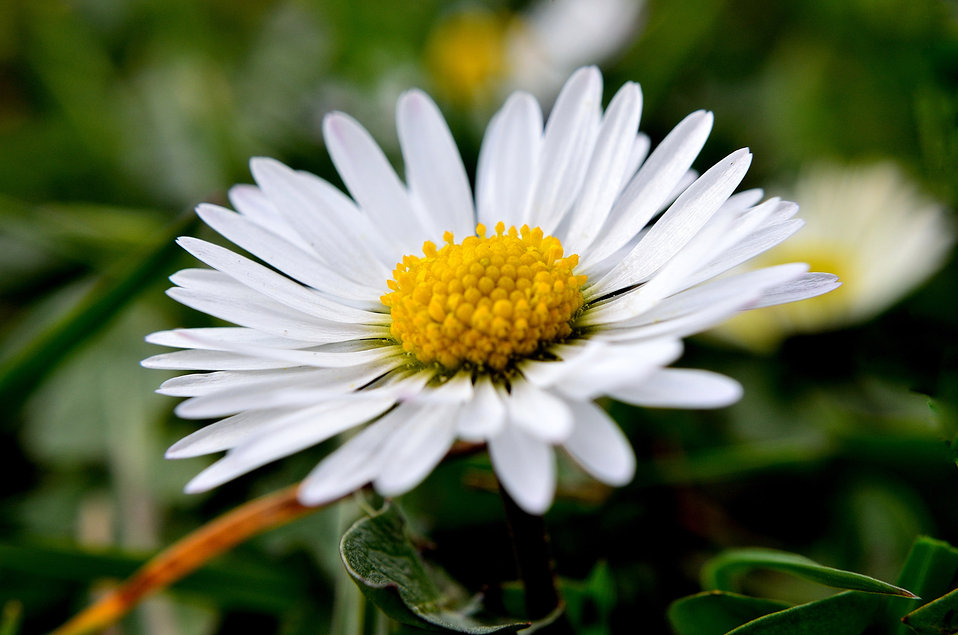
Daisy - macro.